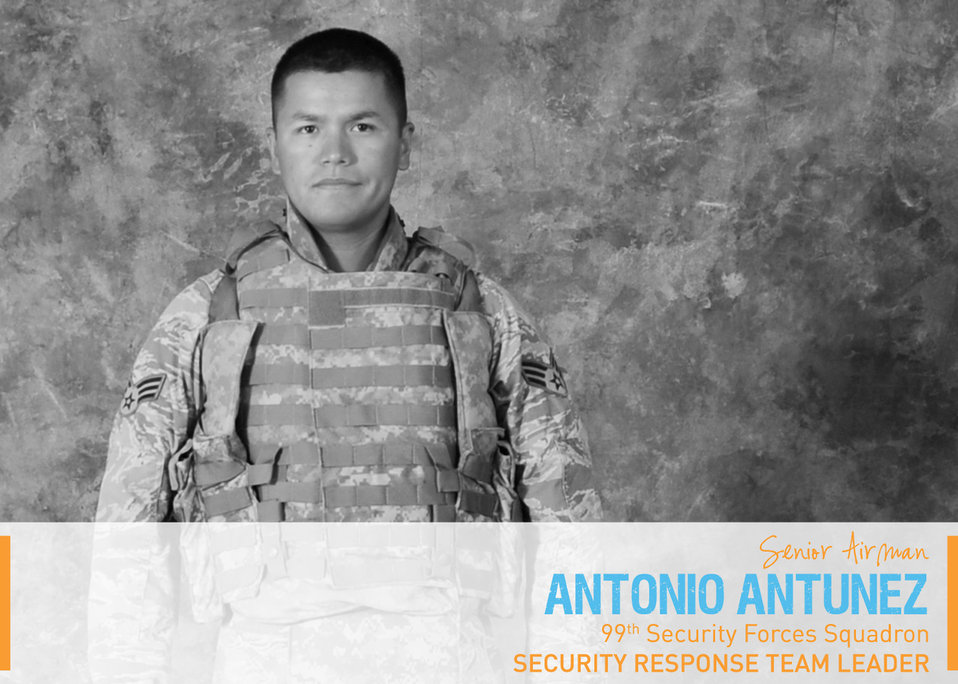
Portraits in Courage Vol 4: Senior Airman Antonio Antunez, security response team leader, 99th Security Forces Squadron, Nellis Air Force Base, Nev. He and the team secured the scene with small arms fire after an improvised explosive device ambush in southern Iraq.